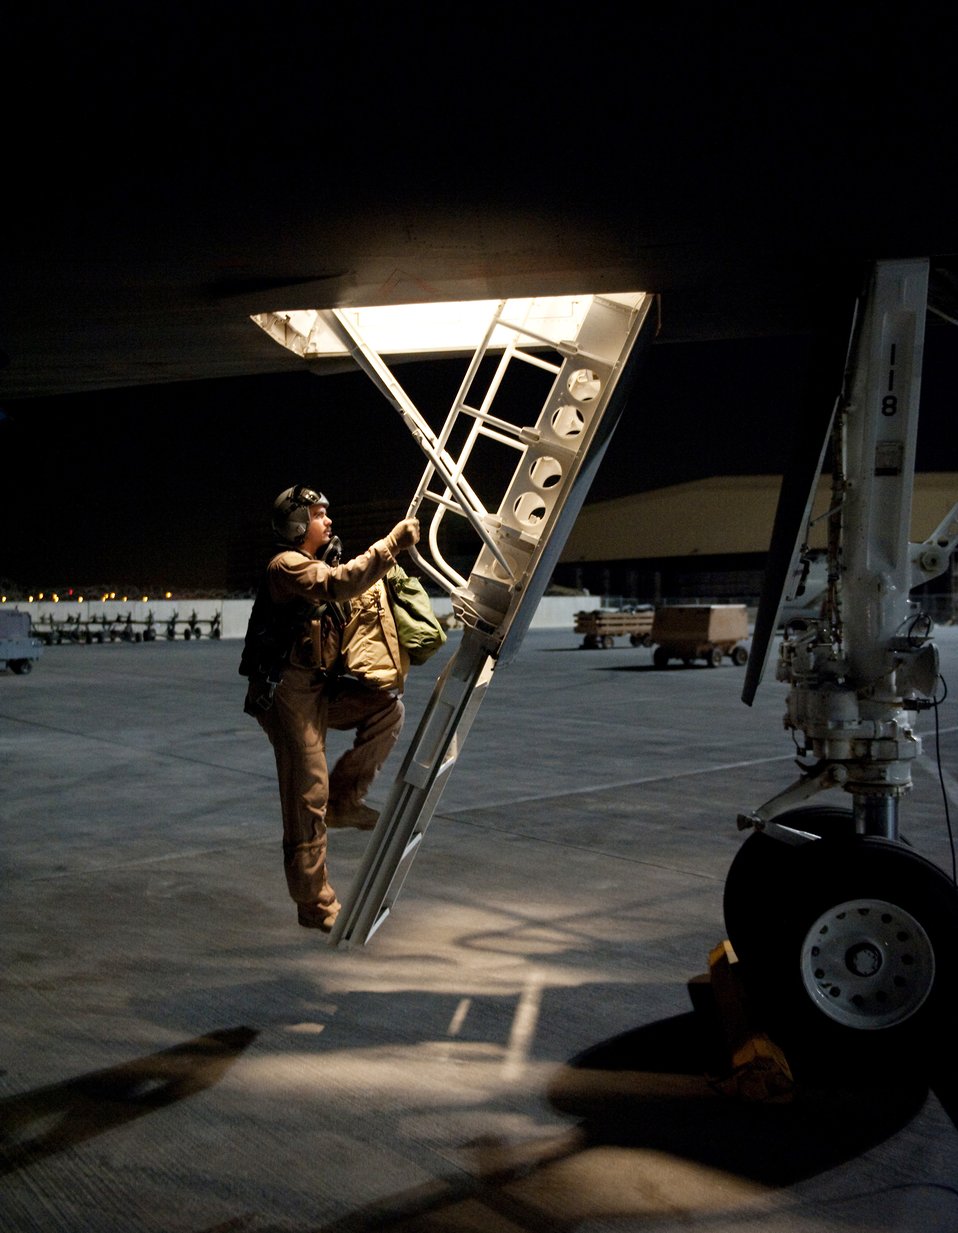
Night shift readiness

Capt. David Grasso climbs aboard a B-1B Lancer for a mission Sept. 3, 2009, at an air base in Southwest Asia. The B-1B is versatile multi-mission weapon system capable of delivering massive quantities of precision weapons against a variety of targets. Captain Grasso is a pilot with the 37th Expeditionary Bomber Squadron, and is deployed from Ellsworth Air Force Base, S.D.